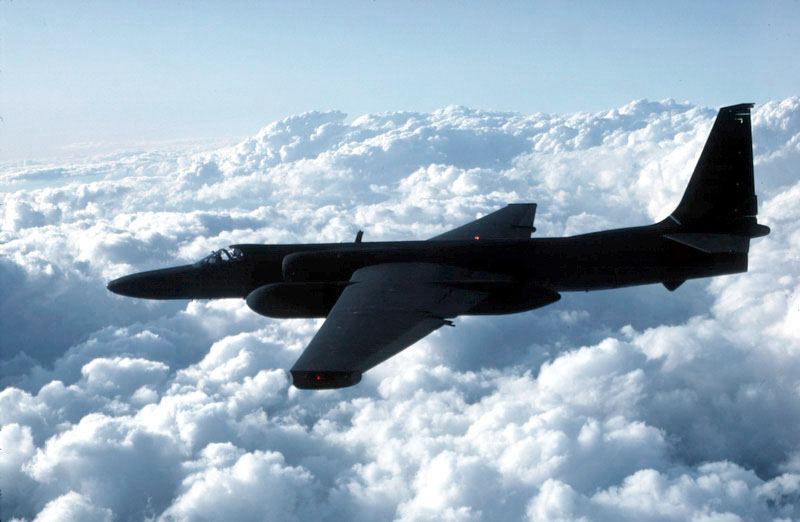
After Katrina: ACC's intel team applies lessons learned

The U-2 Dragon Lady is considered the leader among manned intelligence, surveillance and reconnaissance sytems. An aircraft such as this collected images over the Gulf Coast region last year after Hurricanes Katrina and Rita.